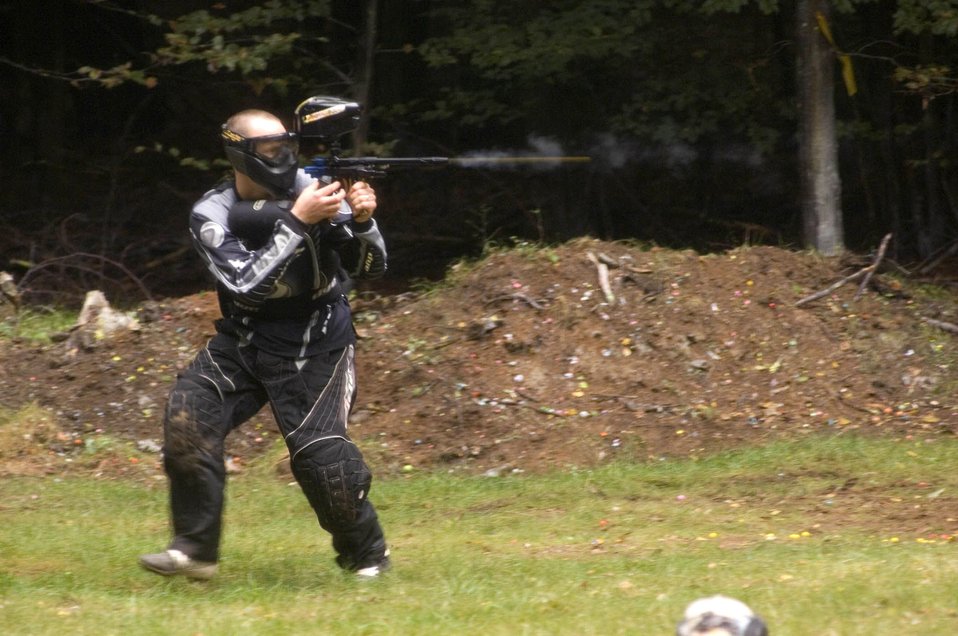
Paint 'em up

PULASKI BARRACKS, Germany -- A paintballer shoots and moves during the first speedball tournament here. Two three-person teams try to mark the other team from opposite ends of an enclosed area competed against each other from opposite ends of an enclosed area during a three-minute contest. Fifteen American and German teams participated in the competition.